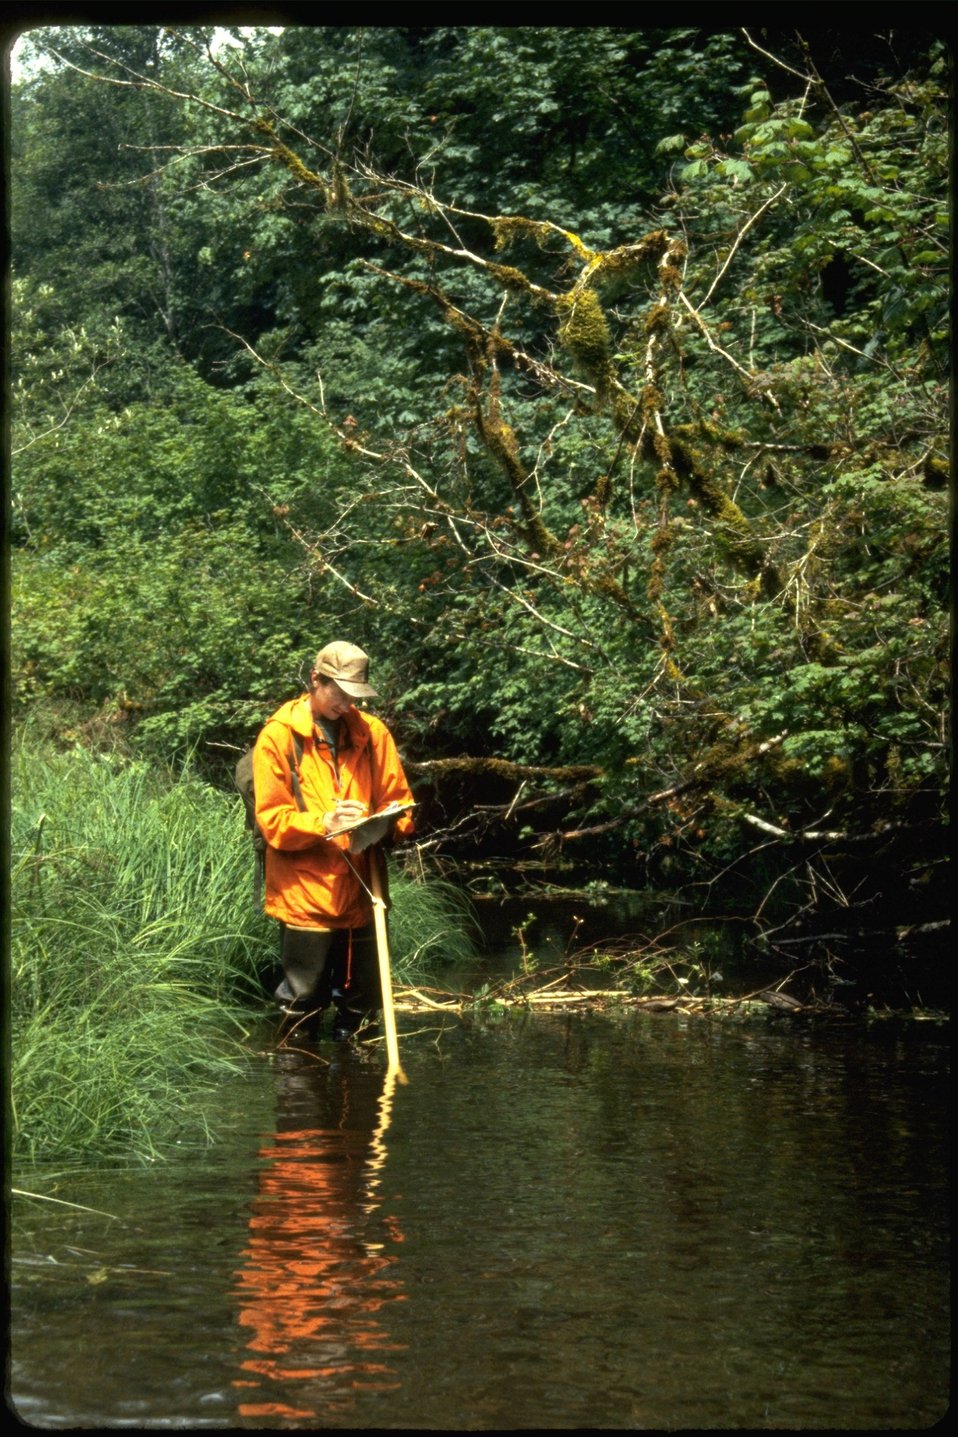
Russ surveying Smith Creek during habitat study.